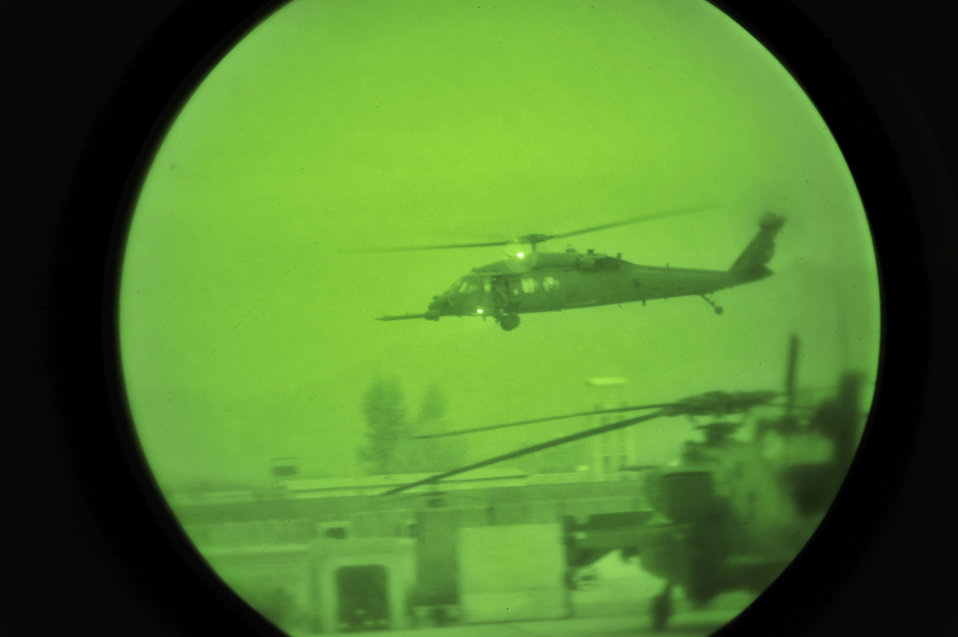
Pedros

An HH-60G Pave Hawk assigned to the 83rd Expeditionary Rescue Squadron at Bagram Airfield, Afghanistan, lands at a forward operating base in Afghanistan. The squadron has the dual-role mission of conducting personnel recovery and casualty evacuation operations for Regional Command East.